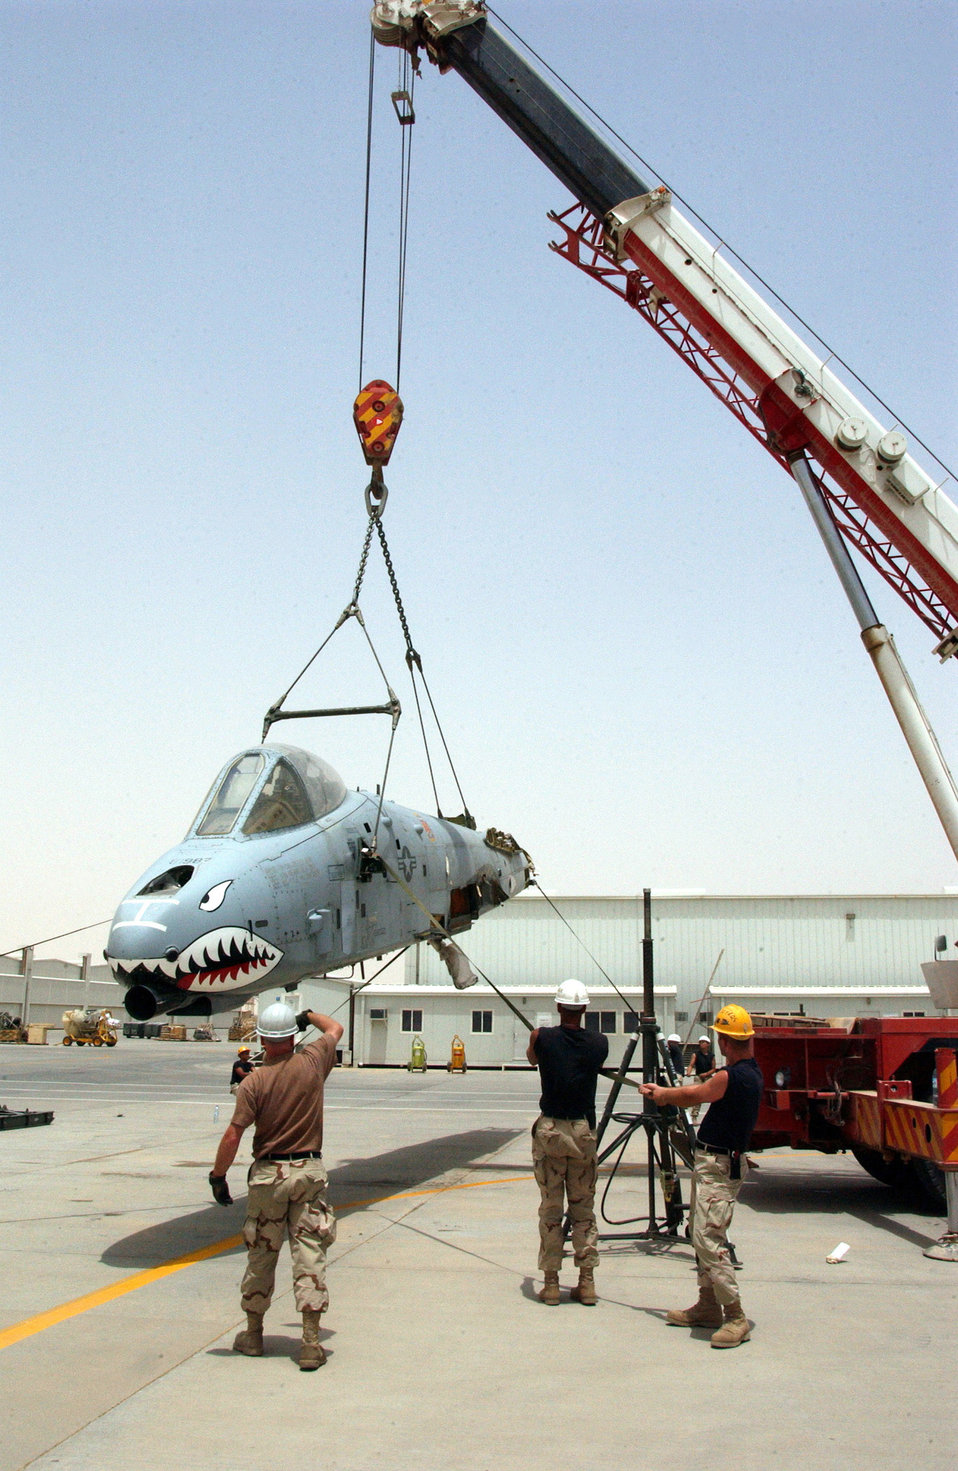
Going home

OPERATION IRAQI FREEDOM -- Tech. Sgt. Jeff McElhoe (left) guides the crane operator to place an A-10 Thunderbolt II fuselage in position so the shipping cradle can be moved underneath. The aircraft received severe battle damage during a combat mission over Iraq in April and will be shipped back to the United States for repair.